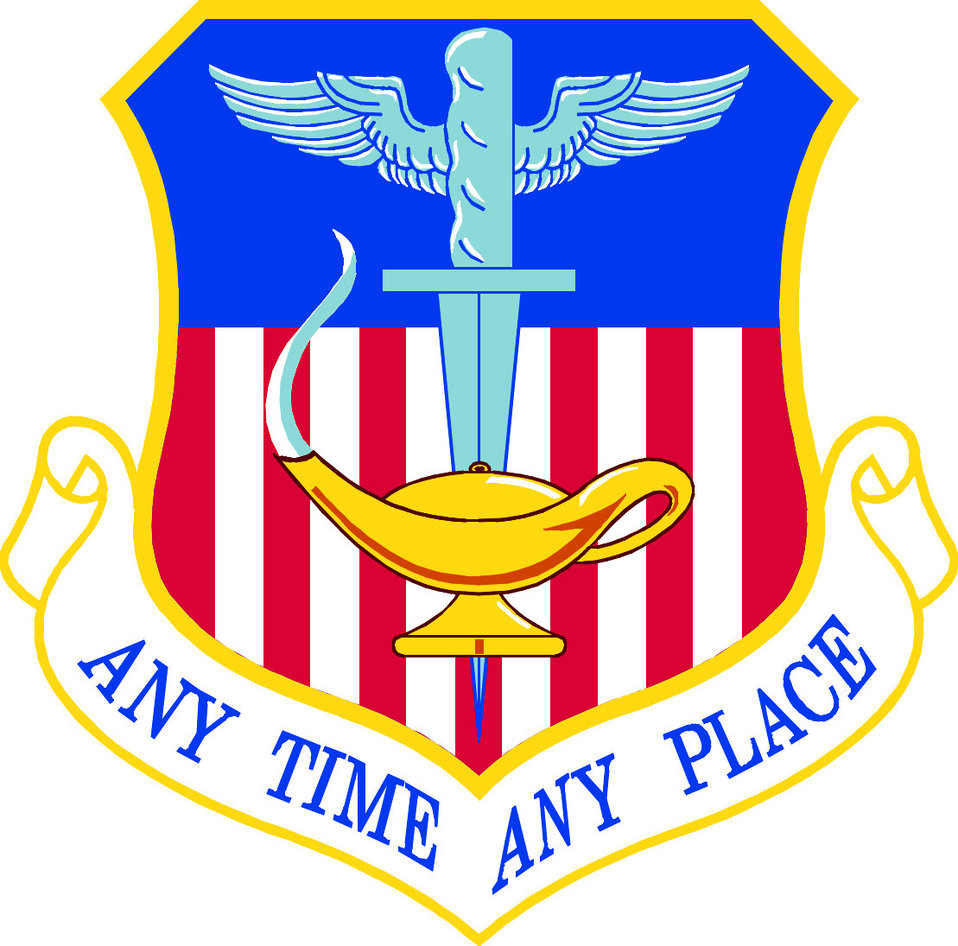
1st Special Operations Wing Shield